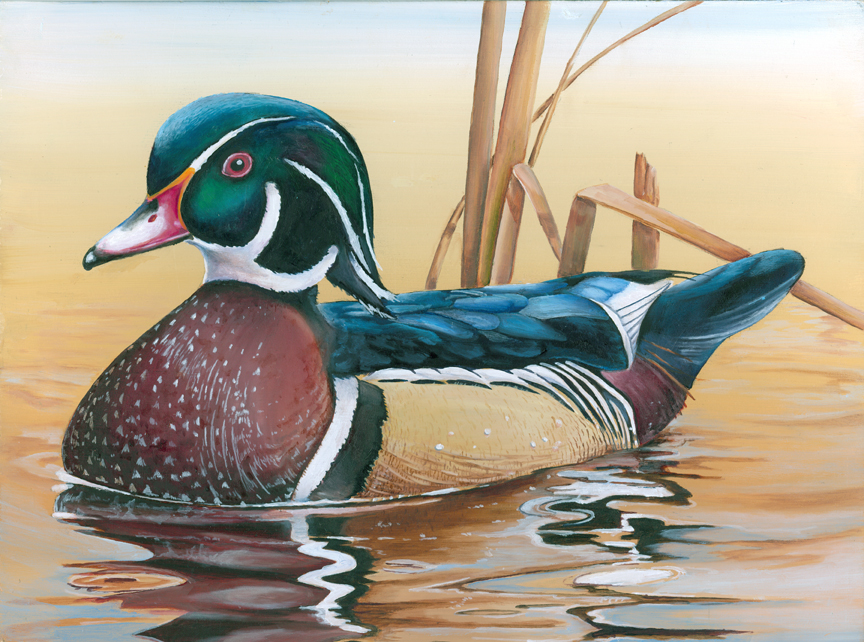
Montana

2012 Junior Duck Stamp
State Best of Show
Montana